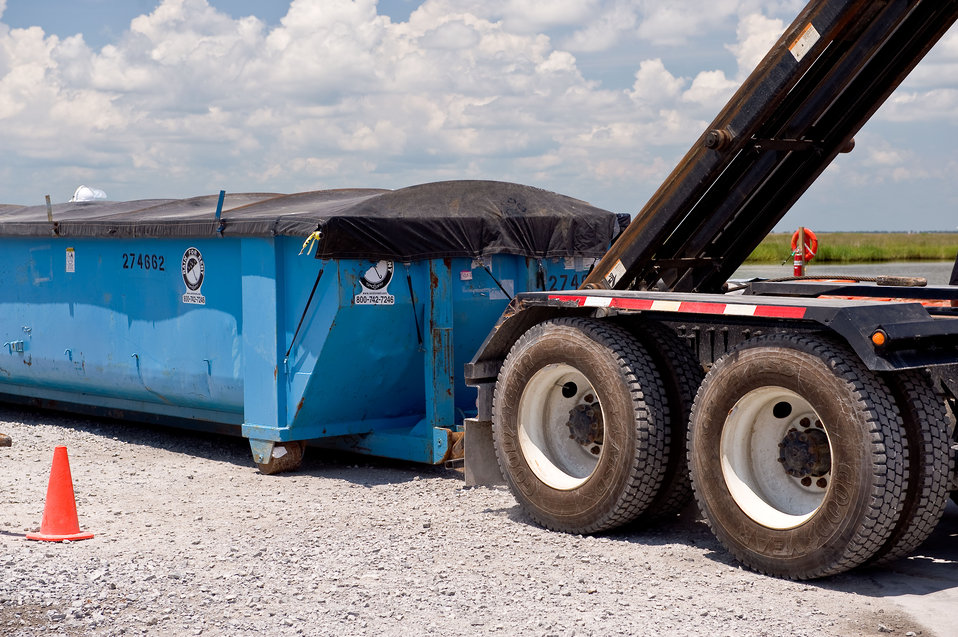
August 6, Loading oil waste containers for offsite disposal